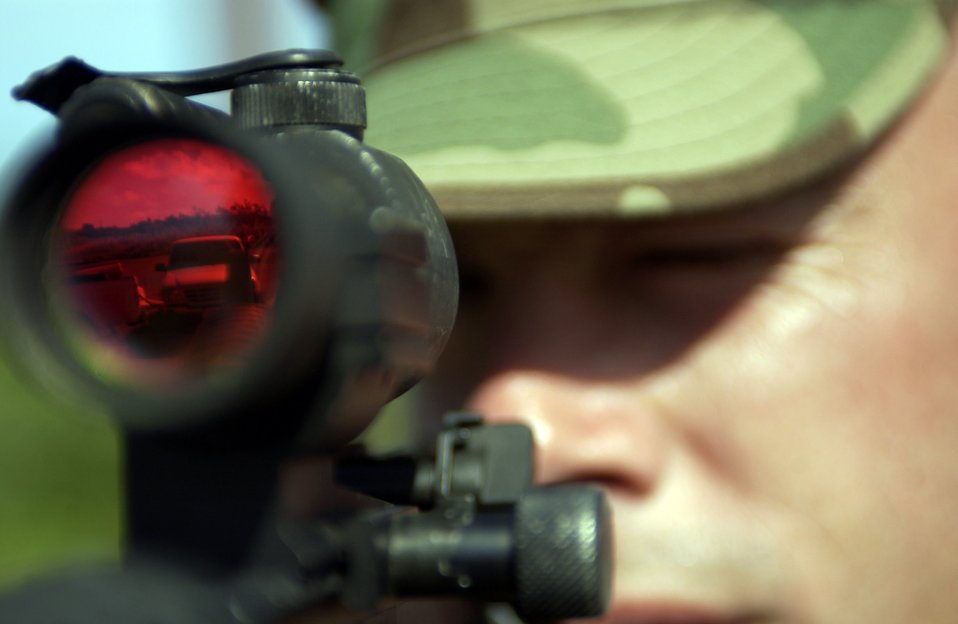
Tracking protection

ANDERSEN AIR FORCE BASE, Guam (AFPN) - Tech. Sgt. Eric L. Hall provides protection for a tactical tracking team during a training mission. The 613th Security Forces Squadron is learning tracking techniques from the Guamanian police.